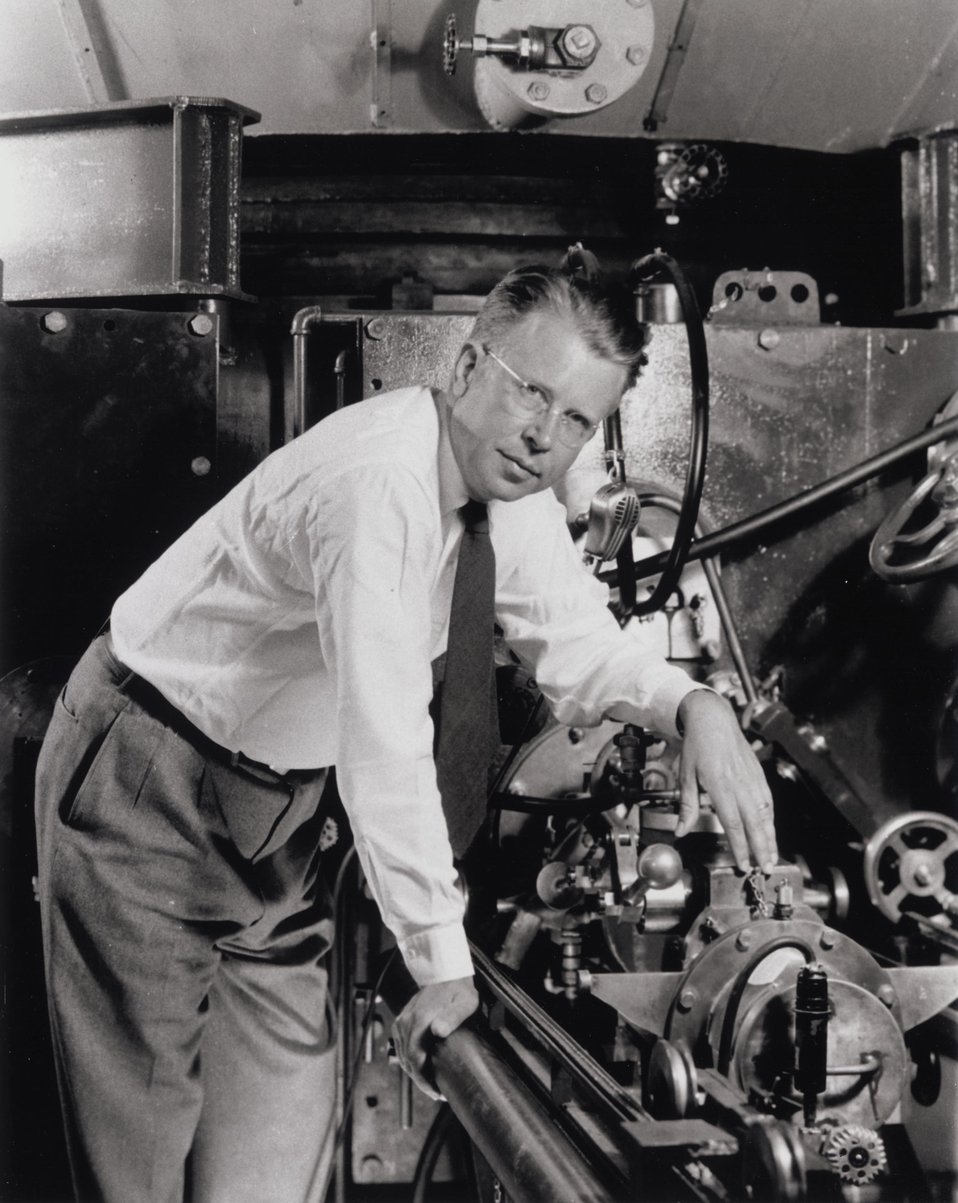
E.O. Lawrence